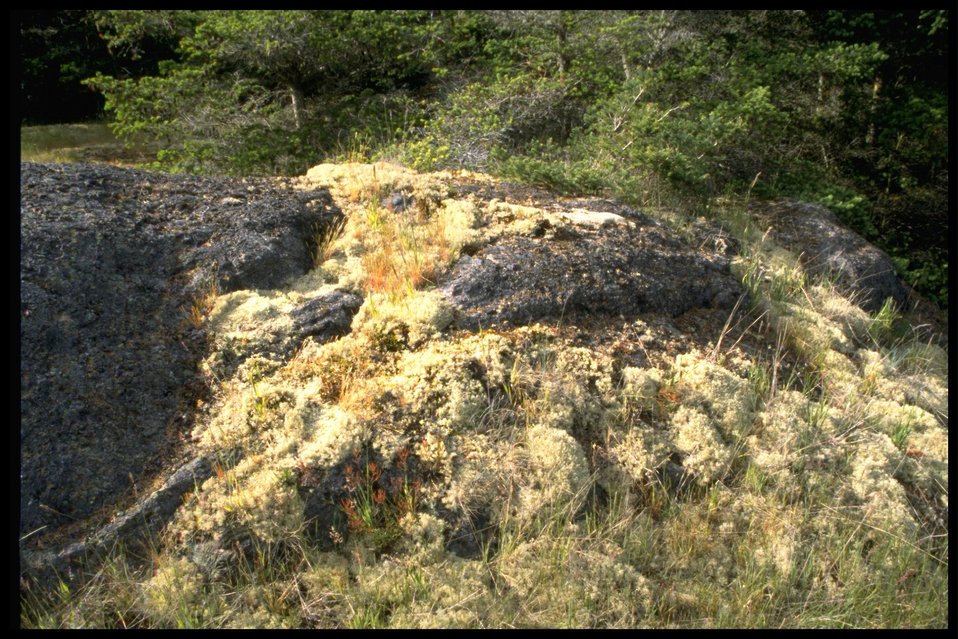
Point Colville lichen habitat.